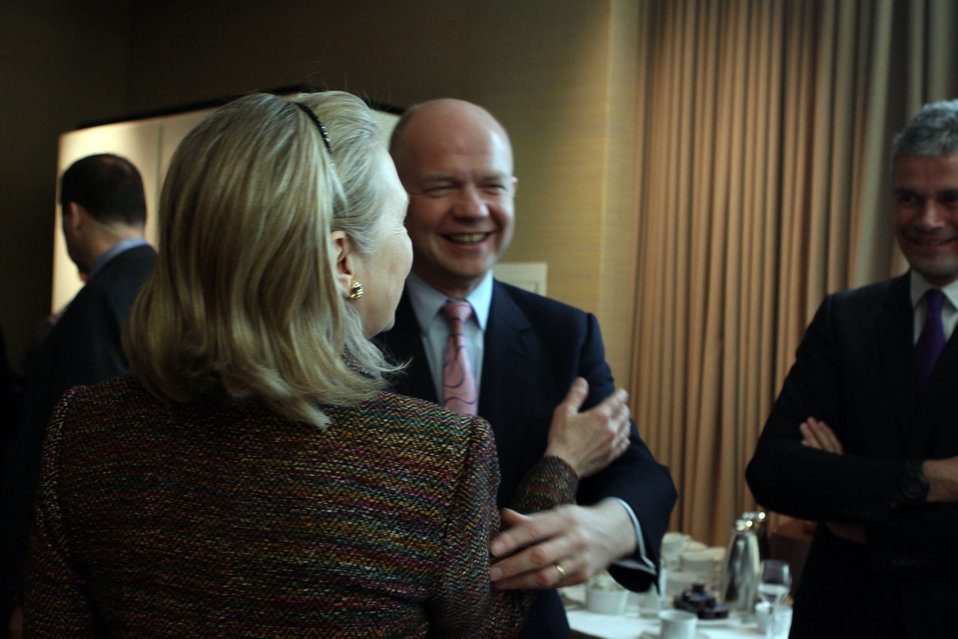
Secretary Clinton Speaks With British Foreign Minister Hague and French European Affairs Minister Vauquier

U.S. Secretary of State Hillary Rodham Clinton speaks with British Foreign Secretary William Hague, center, and French European Affairs Minister Laurent Vauquier, right, at a meeting of the Quint Foreign Ministers at the Hotel Intercontinental in Geneva, Switzerland, on February 28, 2011.